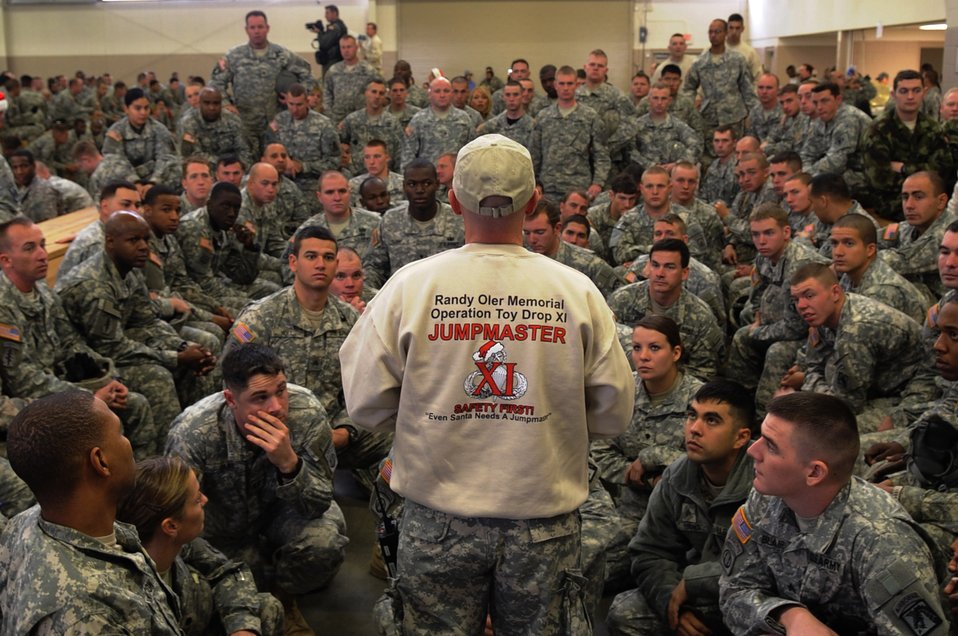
Operation Toy Drop

Army Sgt. 1st Class Jason McLoud of the 82nd Airborne Division from Fort Bragg, N.C., gives a jump brief to a group of Soldiers selected to earn foreign jump wings Dec. 5 during Operation Toy Drop at Pope Air Force Base, NC. Operation Toy Drop is an annual Airborne jump at Fort Bragg in its 11th year hosted by the Army Civil Affairs and Psychological Operations Command (Airborne), and supported by Fort Bragg's XVIII Airborne Corps and the Air Force Reserve Command's 440th Airlift Wing at Pope AFB that gives Soldiers and Airmen the opportunity to help local families in need over the holidays while boosting morale and incorporating valuable training. More than 3,000 Soldiers donated a toy for a lottery ticket and the chance to jump under a foreign, jumpmaster earning them their foreign jump wings. This year, German and Irish jumpmasters will be issuing the commands from C-130 Hercules aircraft during the operation.